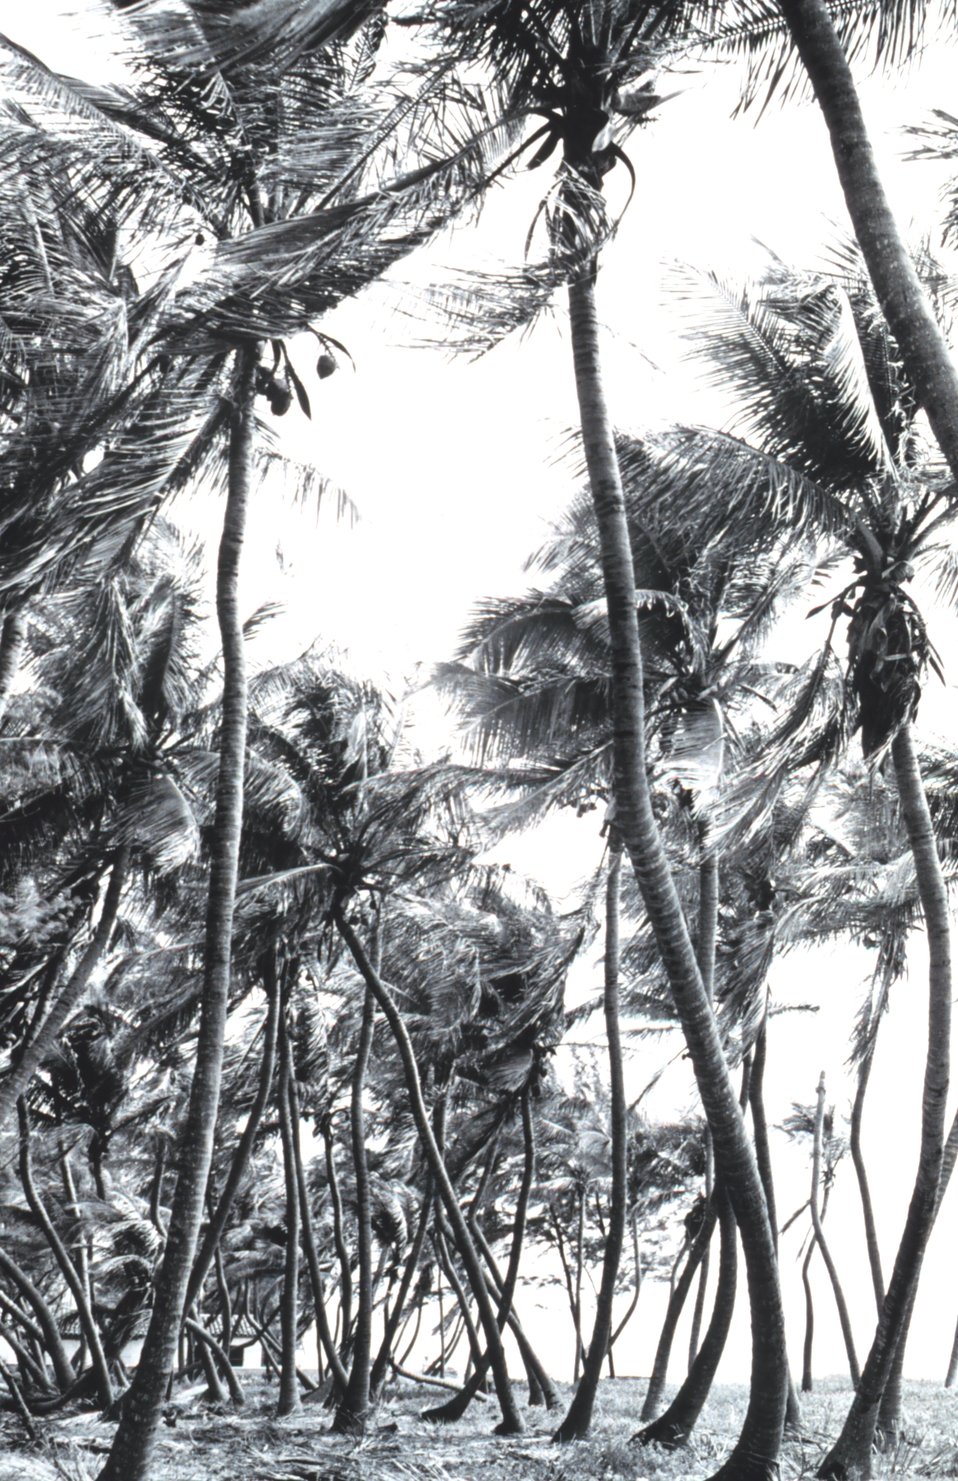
A profusion of palm trees at aptly named Palm Beach